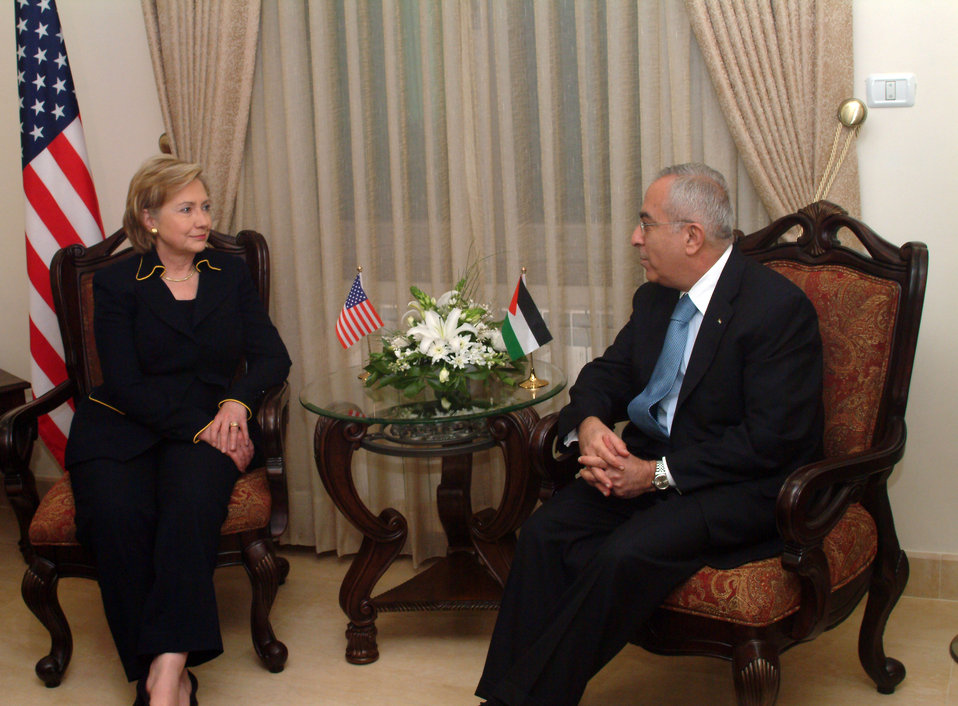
Secretary Clinton With Palestinian Authority Prime Minister

U.S. Secretary of State Hillary Rodham Clinton with Palestinian Authority Prime Minister Salam Fayad in Ramallah March 4, 2009.